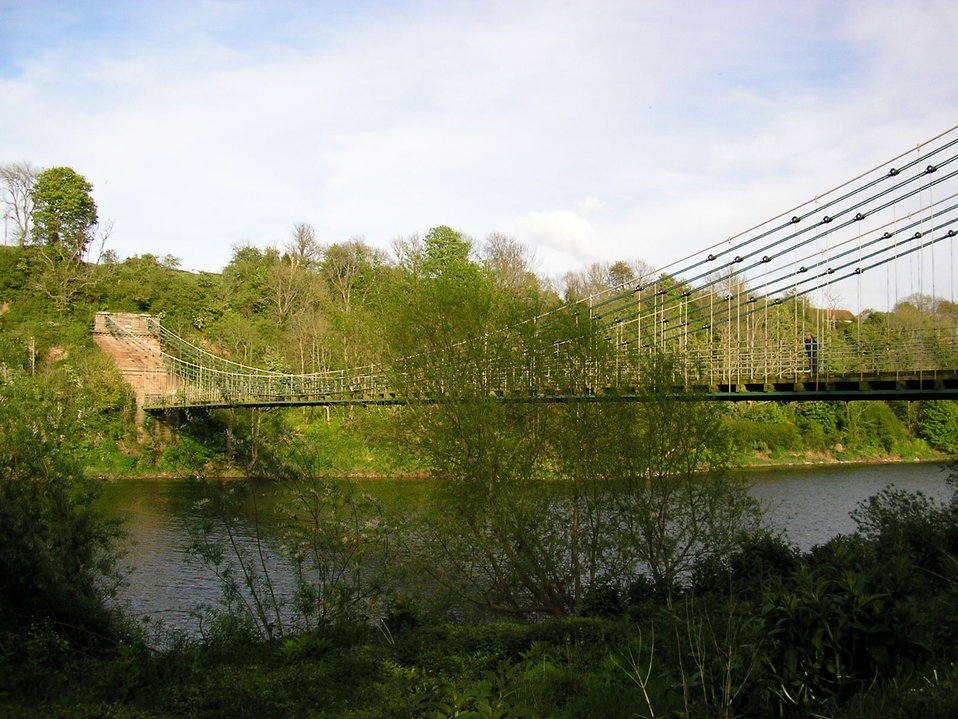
The Union Bridge over the River Tweed between England and Scotland. Viewed from the Scottish bank.